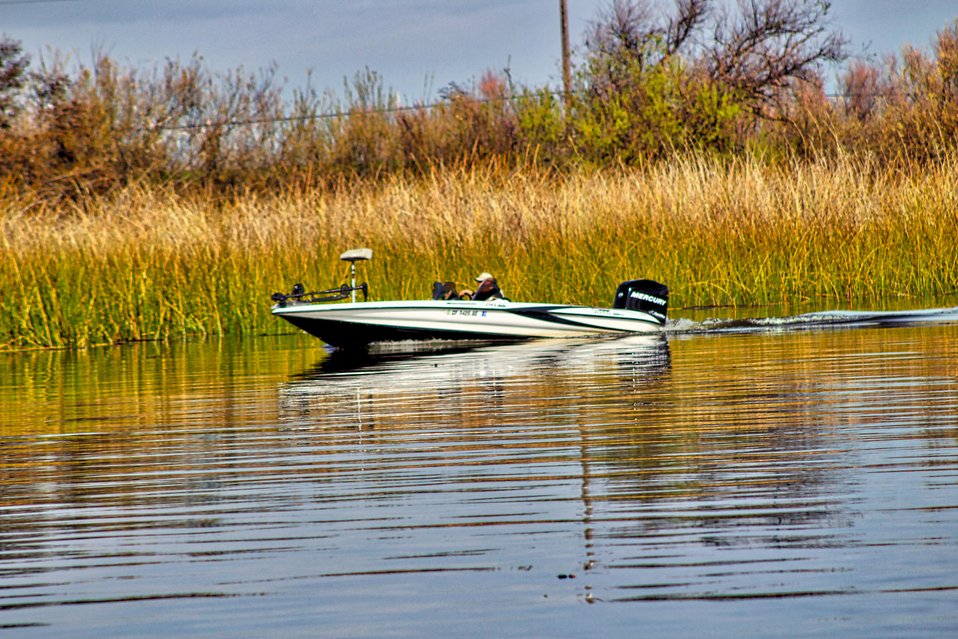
San Joaquin River

Boater near Rio Vista